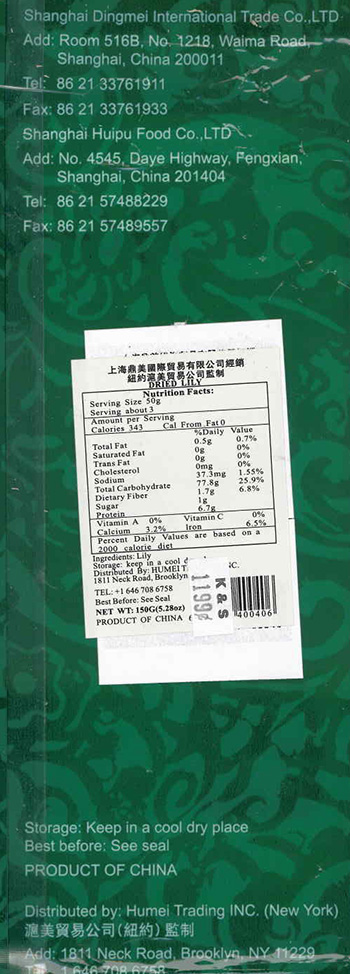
RECALLED – Dried Lily

February 4, 2014 – Product Recall – Humei Trading Inc. Issues Alert on Undeclared Sulfites in 'Dried Lily' .